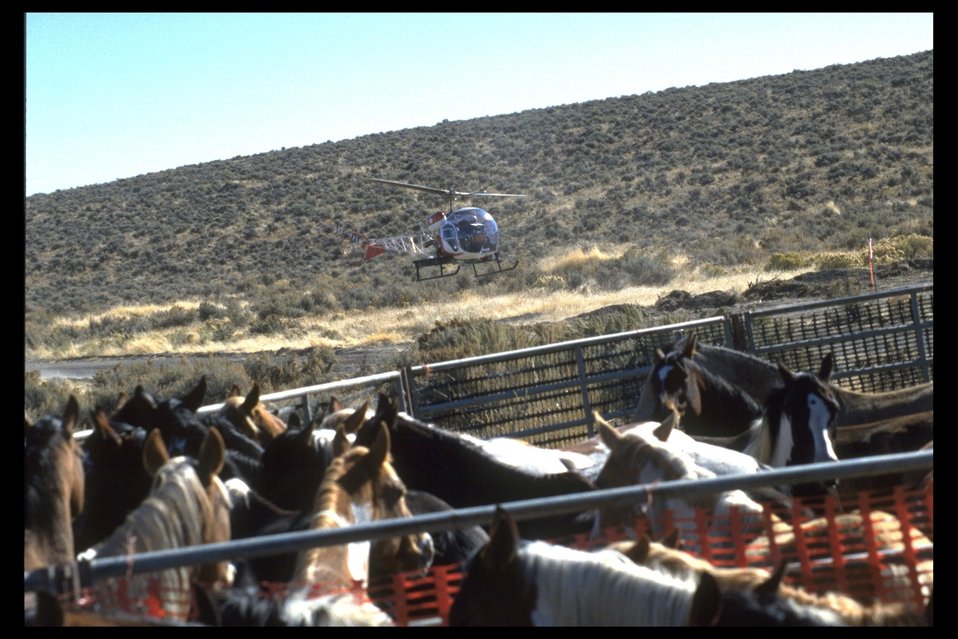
South Steens wild horses at a trap in the Burns District.